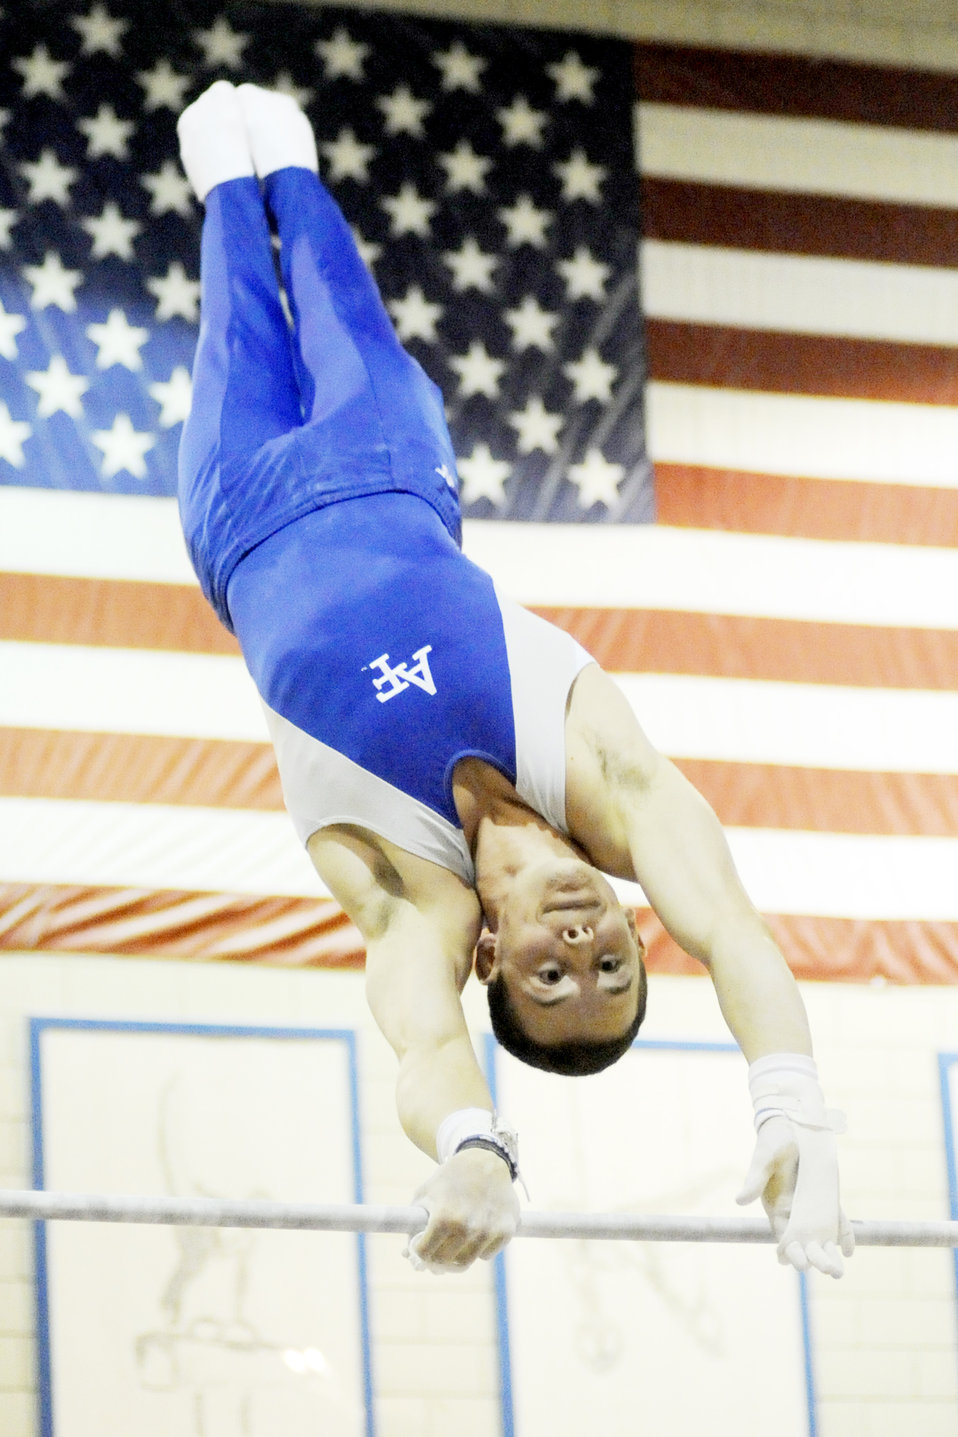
Falcon gymnasts lose in home final

Air Force sophomore Joel Uptmor competes on the high bar during the Falcons home finale against Illinois-Chicago at the U. S. Air Force Academy's cadet gymnasium in Colorado March 7, 2010. Uptmor tied for fifth on high bar with a 13.85, a season best. The Falcons set a new team record, beating their previously set record of 342.55 which was set last year in Arizona, but fell to Illinois-Chicago 348.60 - 346.45.